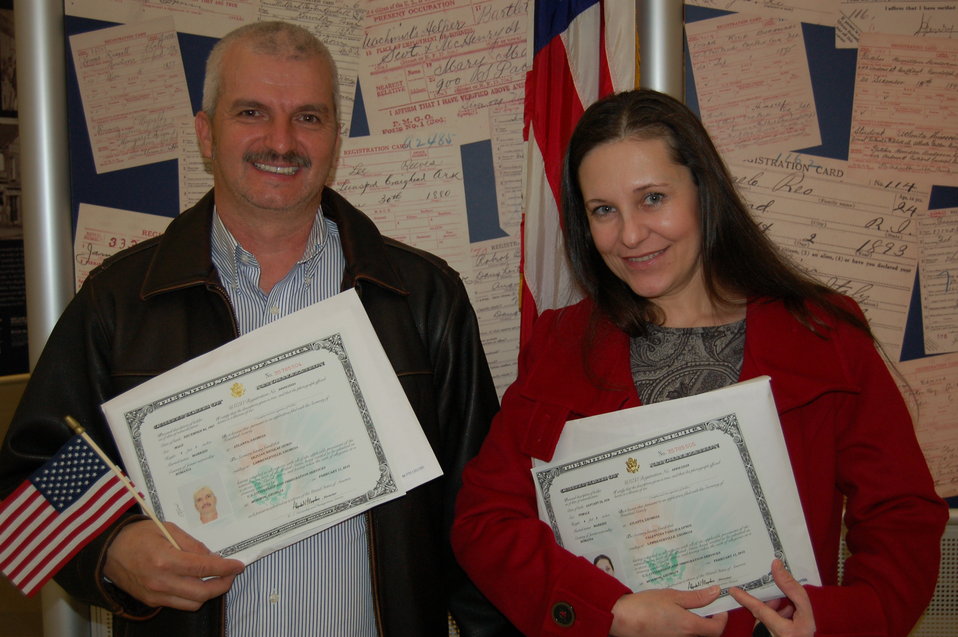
New Citizens